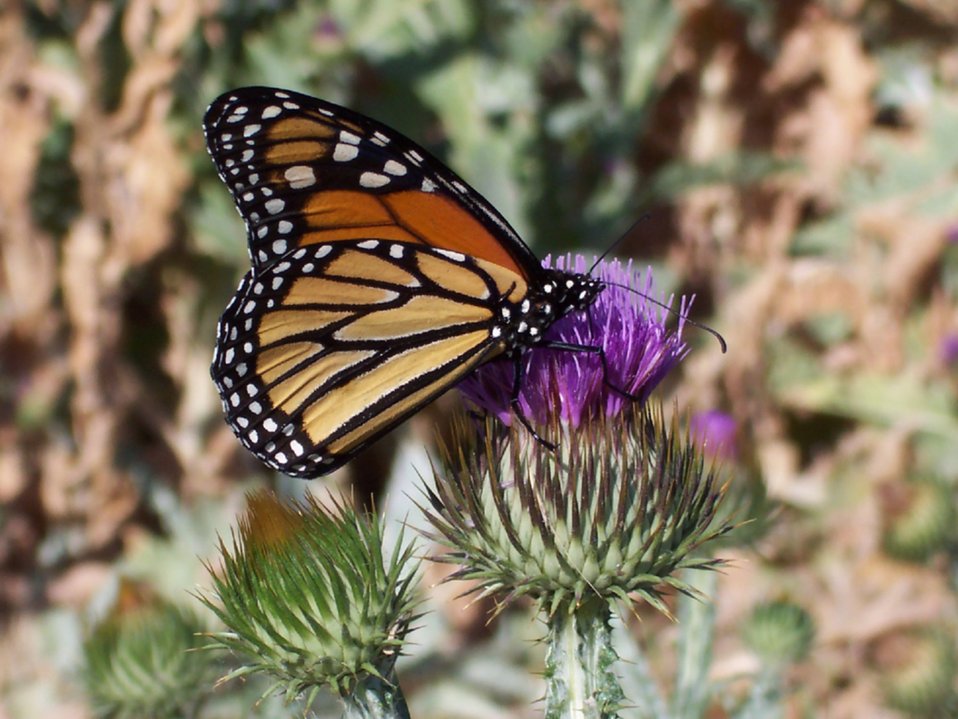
Butterfly on Scotch Thistle at Sutton Mountain burn unit near Mitchel, Oregon. Wendy Joslin, Prineville Wildlife1